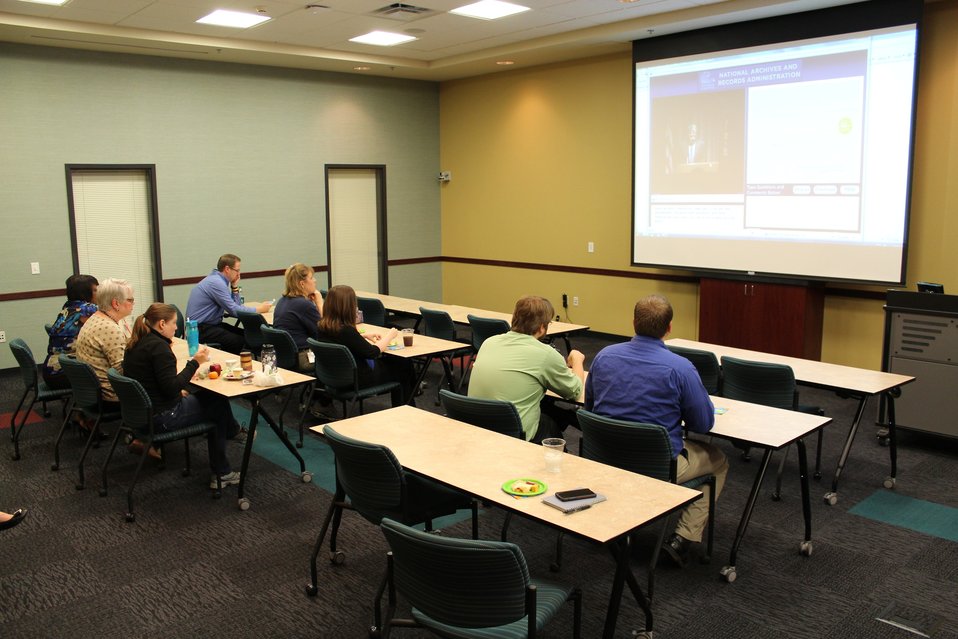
Monica Pacheco, Joyce Burner, Jennifer Audsley, Stephen Spence, Dee Harris, Elizabeth Burnes, Christopher Magee, and Jake Ersland watching the live broadcast of the Archivist's Award Ceremony; Location: National Archives at Kansas City, Kansas City, MO